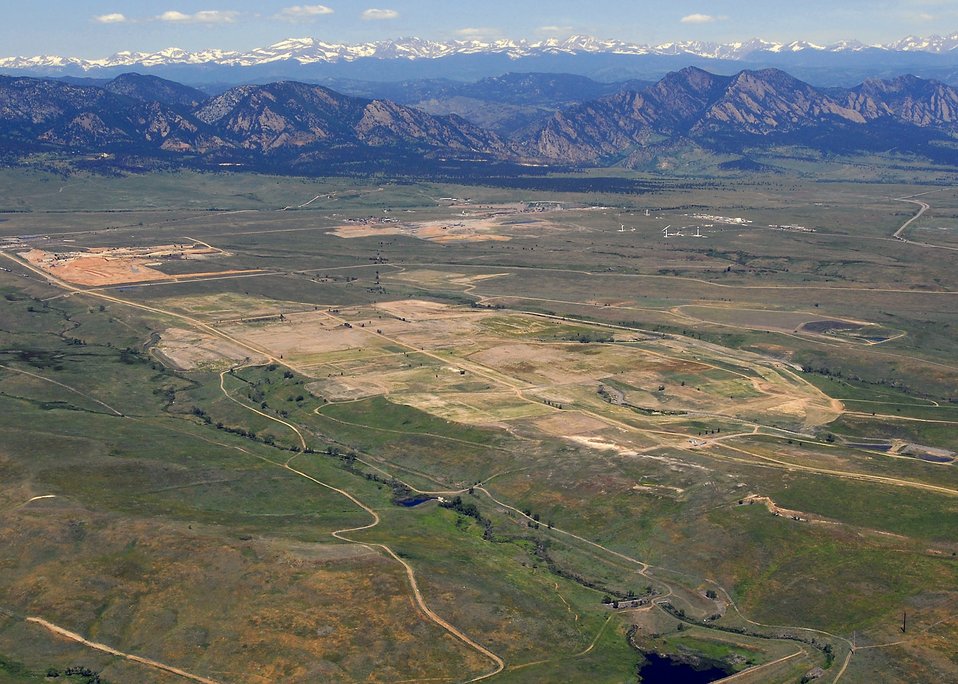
Rocky Flats After